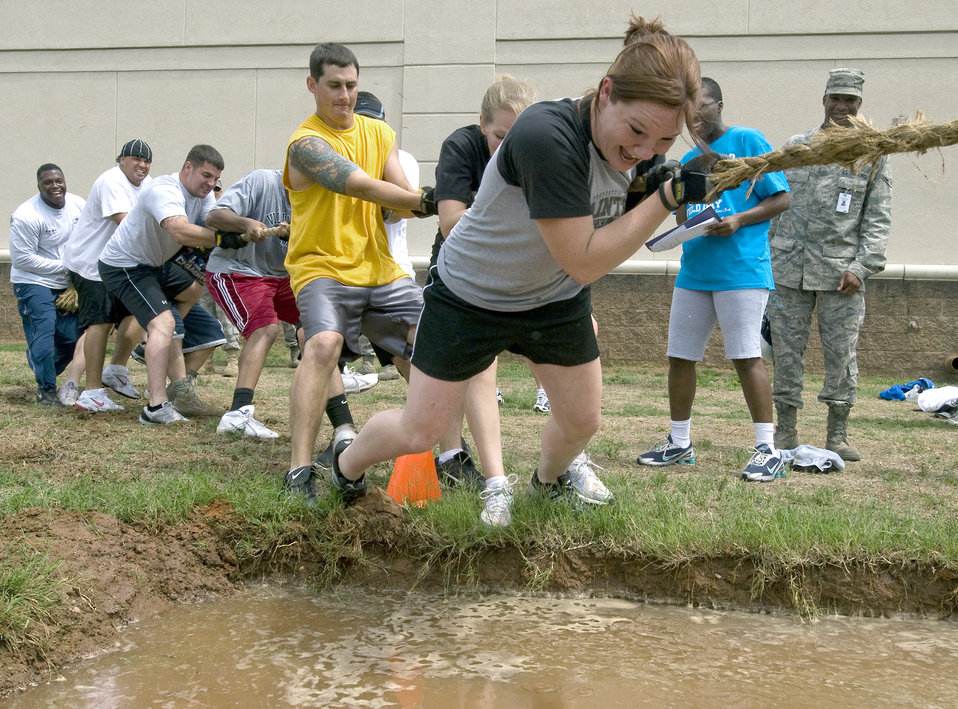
Pull harder, I'm going in!

Losers in the tug-of-war competition are pulled into the water during the 2nd Bomb Wing Sports Day at Barksdale Air Force Base, La. Sports Day consisted of many team sports such as basketball, flag football, dodge-ball, tug-of-war and many others.